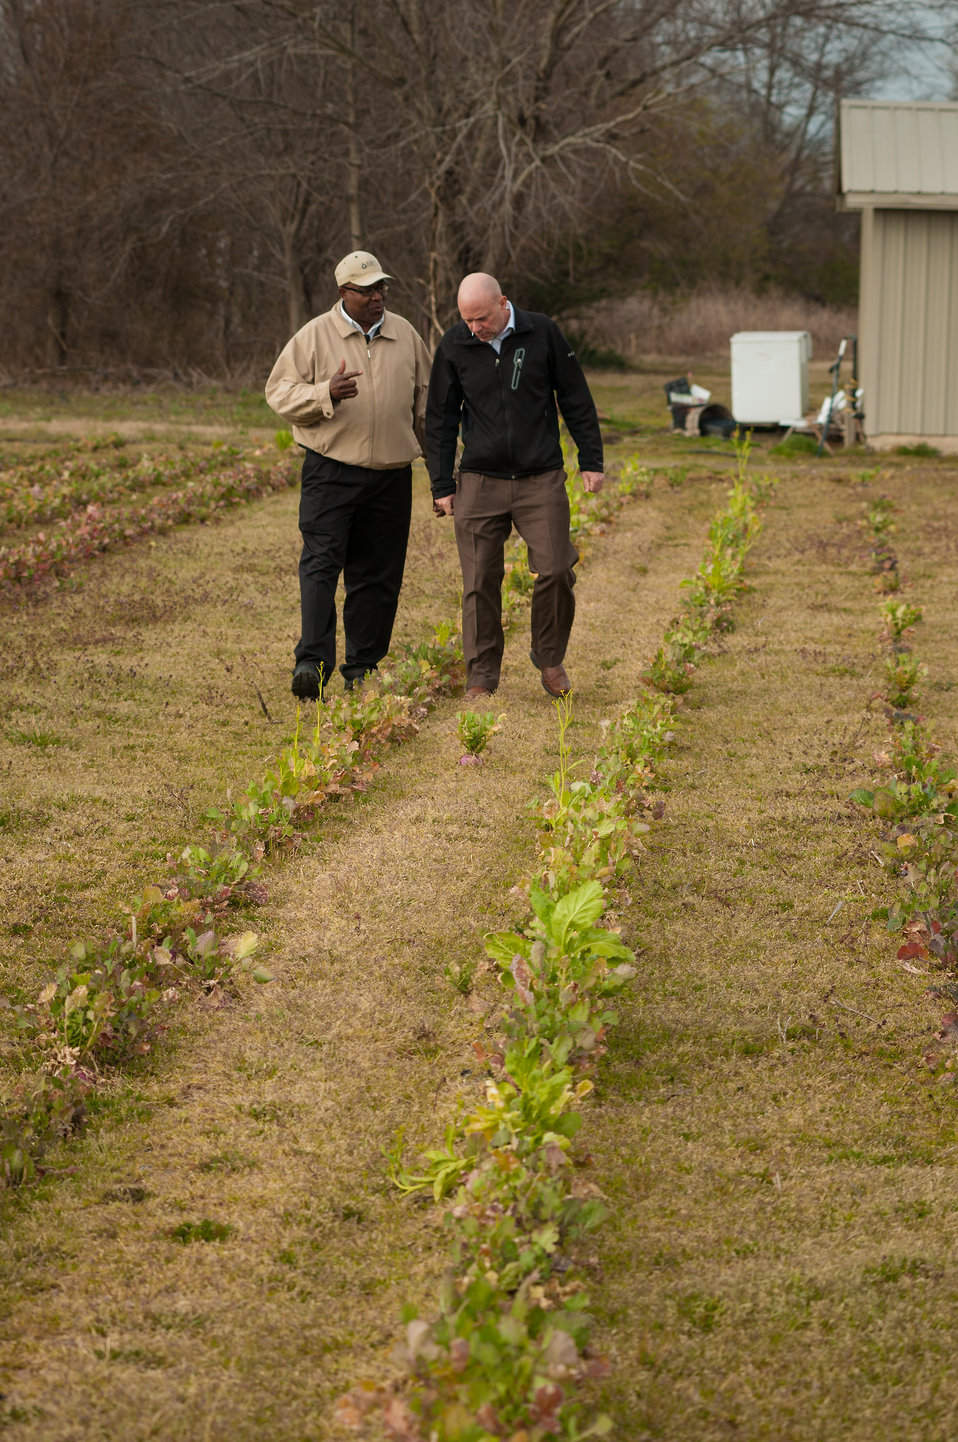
Farmer Theodus Bunch and U.S. Department of Agriculture (USDA) National Water Management Center, Little Rock, AR Keith Admire survey demonstration acreage at the East Arkansas Enterprise Community, (EAEC) Inc. in Forrest City, AR on Mar. 4, 2013. EAEC is one of 42 community-based organizations that are part of the Arkansas Delta Seeds of Change Initiative. Thanks to the efforts USDA in partnership with Heifer International (an International organization whose mission is to work with communities to end hunger and poverty and care for the Earth) and various for-profit and non-profit organizations have organized the Seeds of Change Implementation Plan to use sustainable agriculture to build food systems in the Arkansas Delta. The program has evolved into the Arkansas Delta Seeds of Change (ADSOC) Initiative.